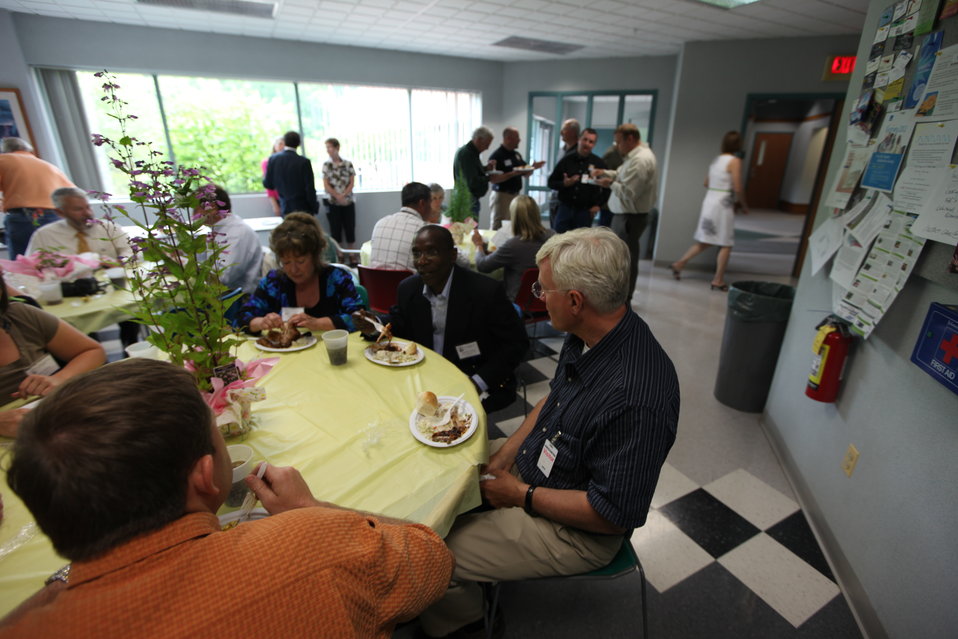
Northeast Region Employee Appreciation Awards

Luncheon